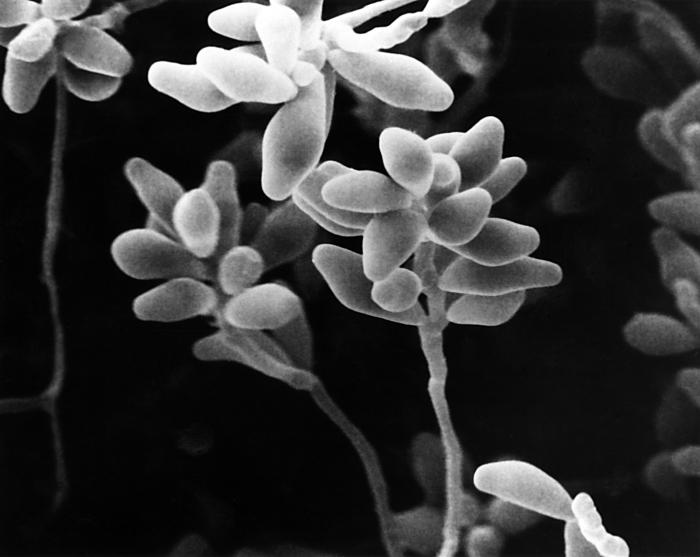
Scanning Electron Micrograph (SEM) of Curvularia geniculata